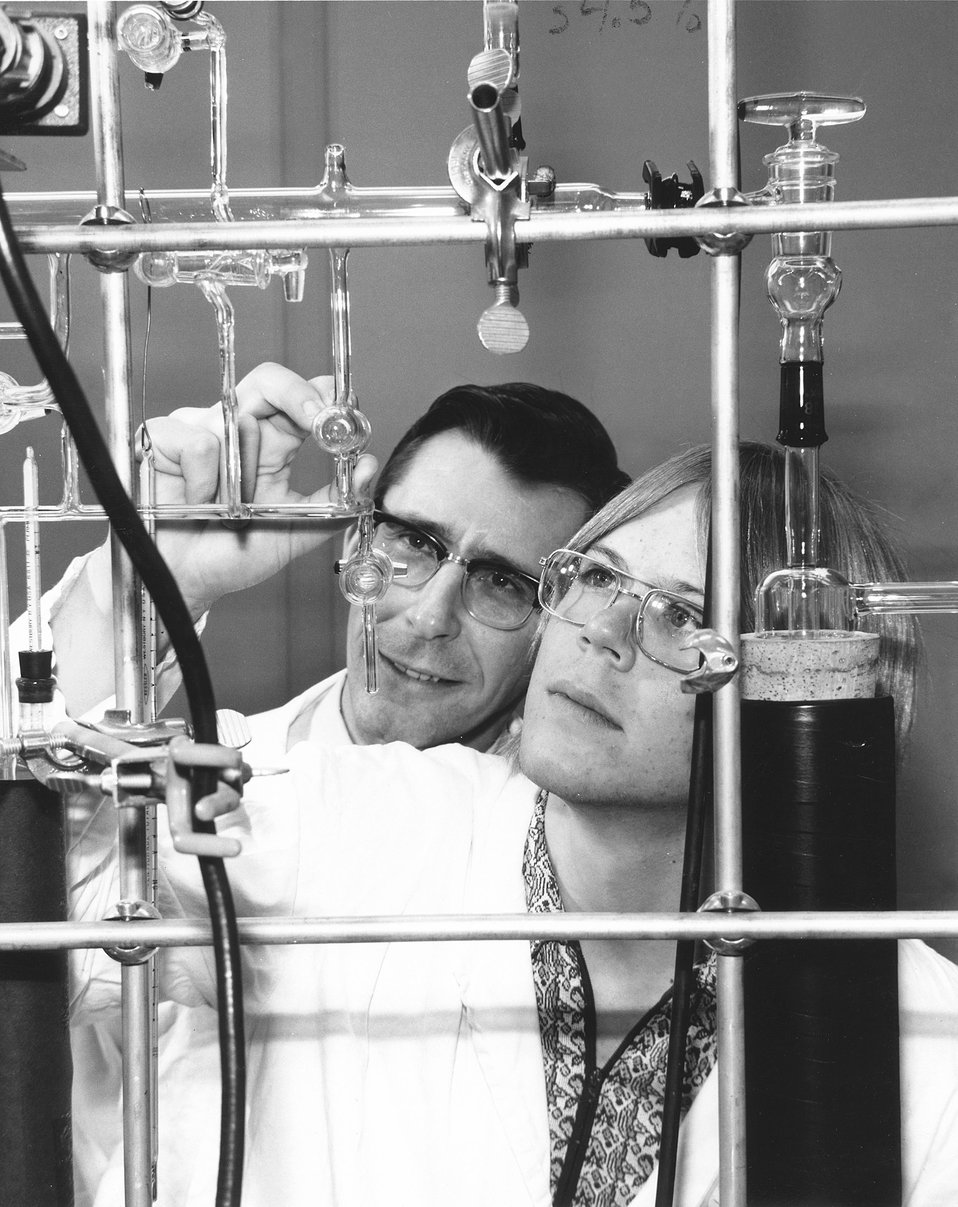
Operating a thermal annealing unit for helium gas release tests. A student-employee works closely with a Westinghouse Hanford, Co. senior engineer. c. 1974